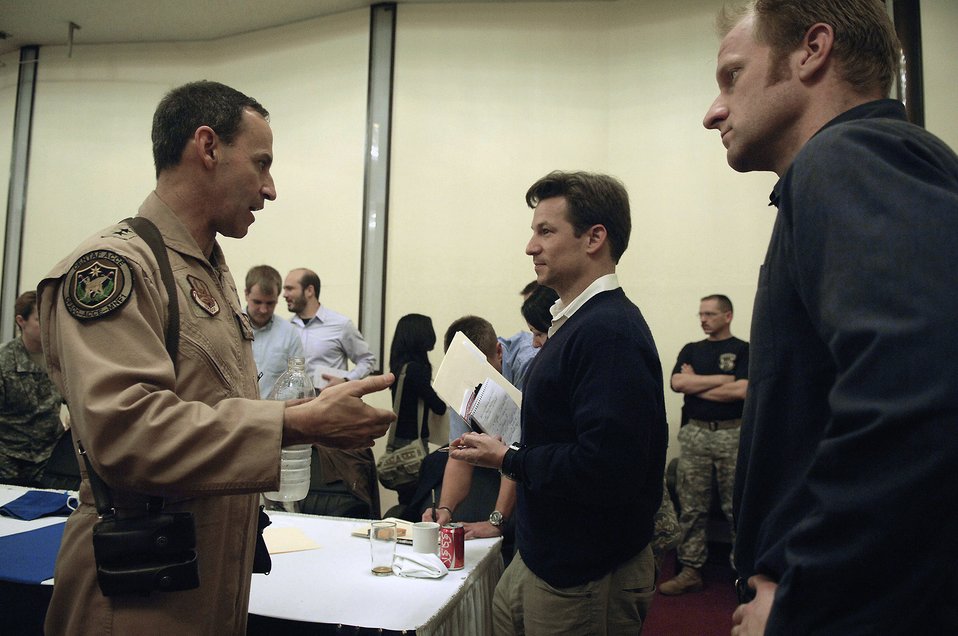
Air Force general praises joint success

Maj. Gen. David M. Edgington speaks with Baghdad media after a press luncheon covering Operation Marne Thunderbolt at the International Zone, Baghdad, Iraq, Jan. 27. General Edgington is the director, Air Component Coordination Element, Multi-National Forces-Iraq. He serves as the forward coordination element between the Combined Forces Air Component Commander and the Commanding General, Multi-National Forces-Iraq.